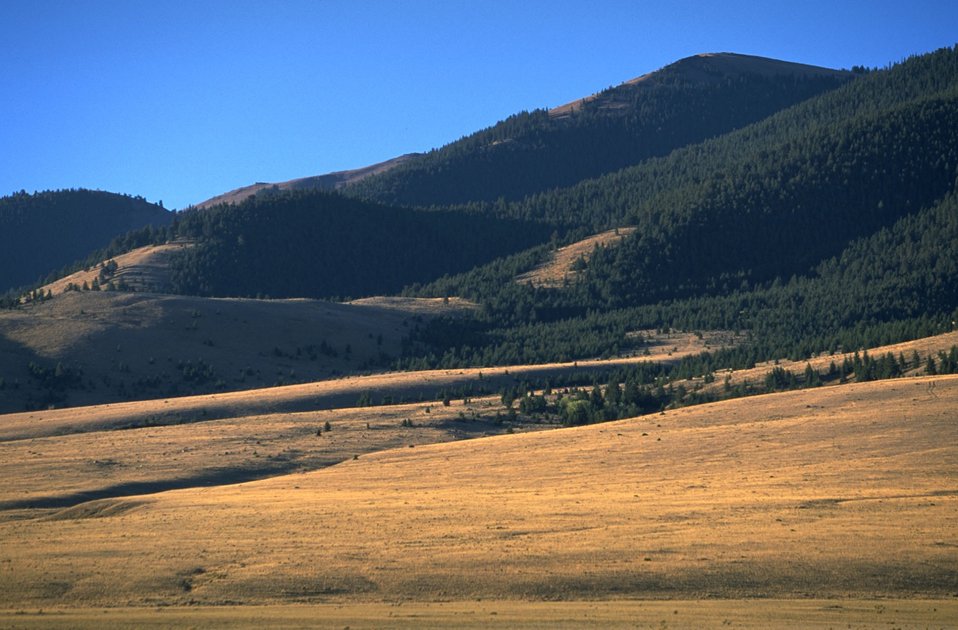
Grassy slope leading to forested mountains